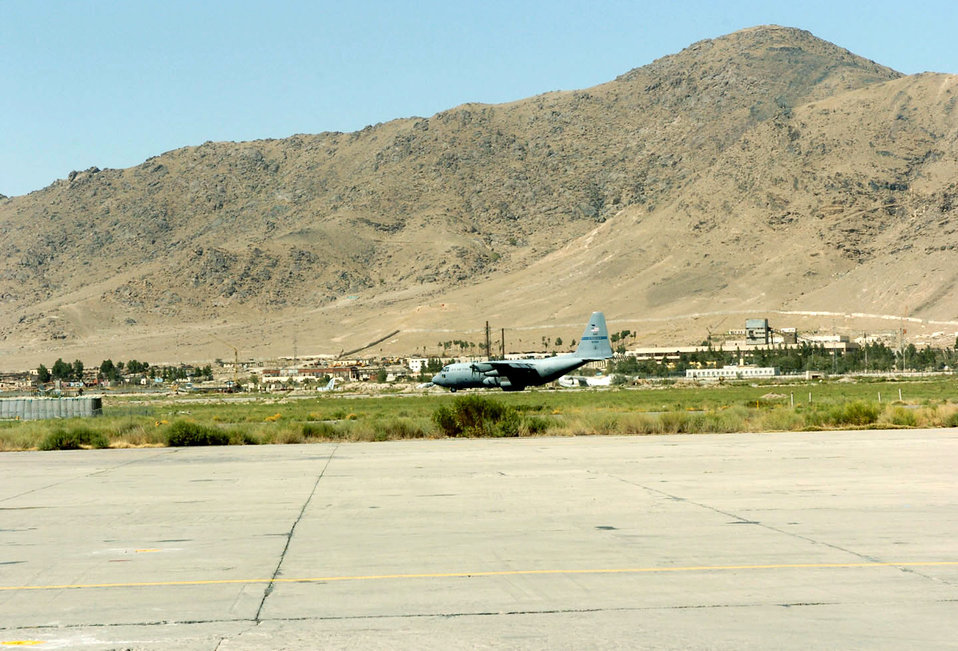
Afghan support

KABUL, Afghanistan -- A U.S. Air Force C-130 Hercules is about to take off from Kabul International Airport here Aug. 15 on its way to Shindand National Airport carrying Afghan soldiers. They are deploying to Shindand to retake control of government property seized as a result of factional fighting in the area.